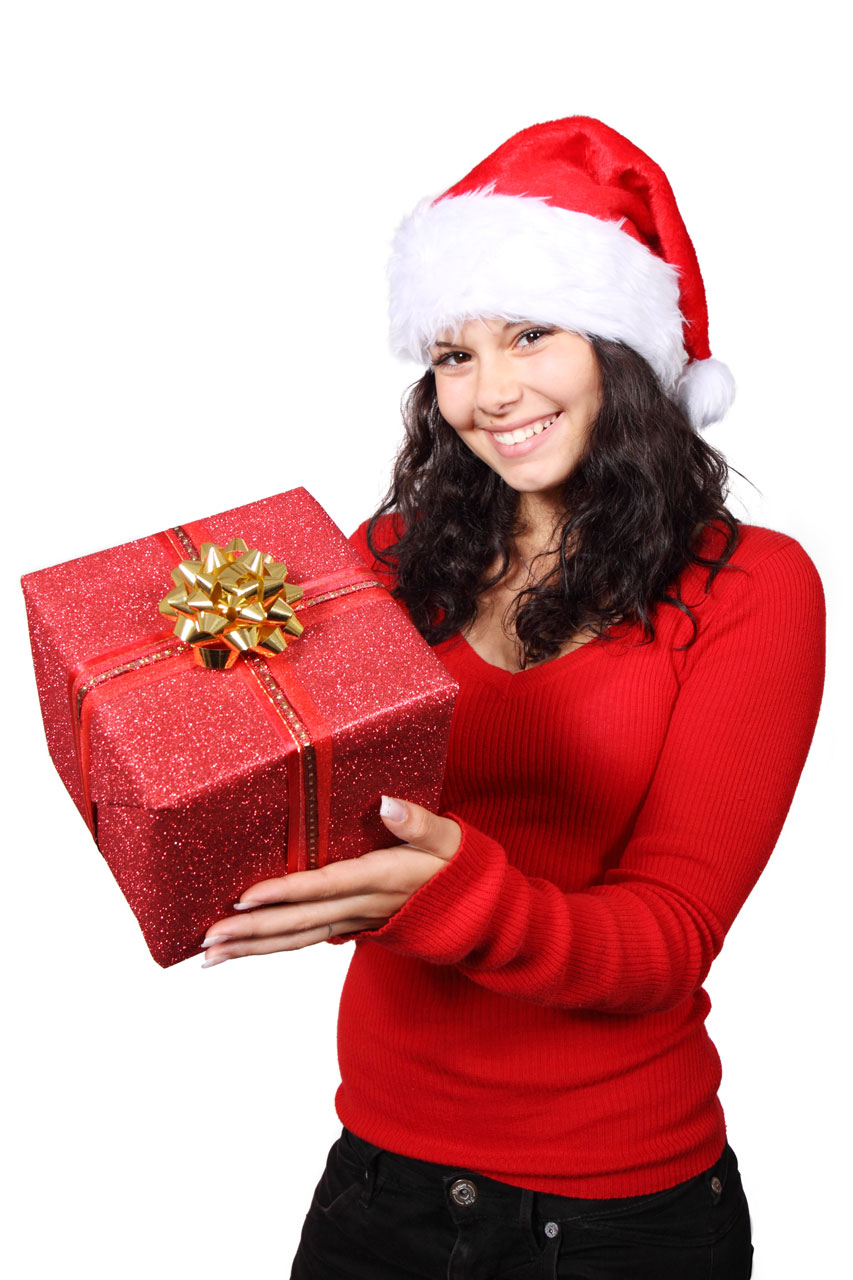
Santa with gift

Cute santa handing a gift.